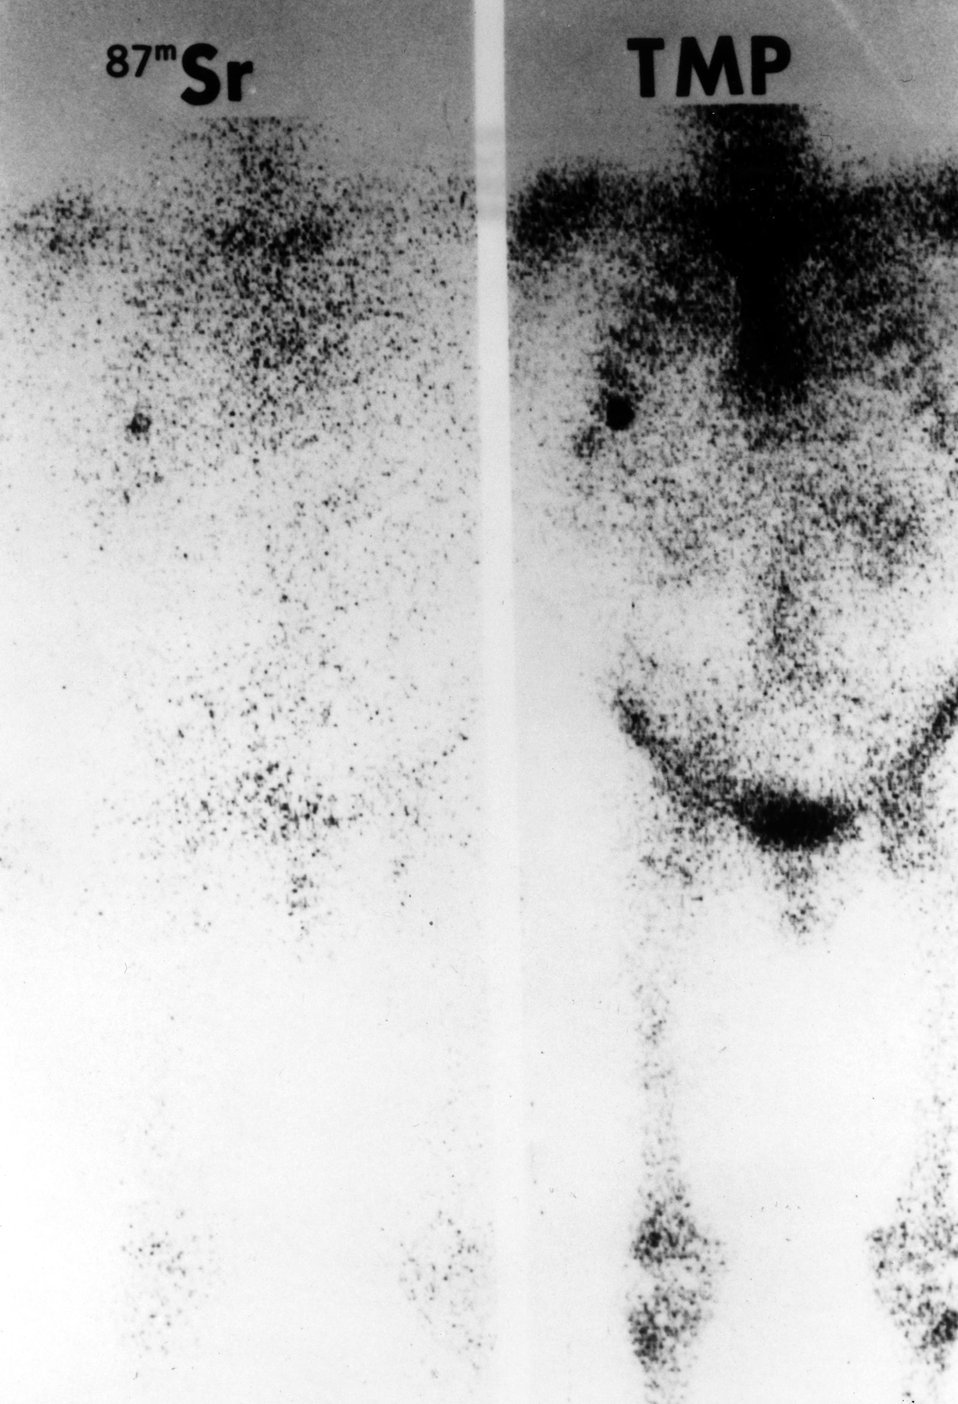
Comparison shows the skeleton imaging ability of stronium-87m as against the new technetium-99m stannous palphosphate (at right) which was licensed for medical diagnostic use during 1973.